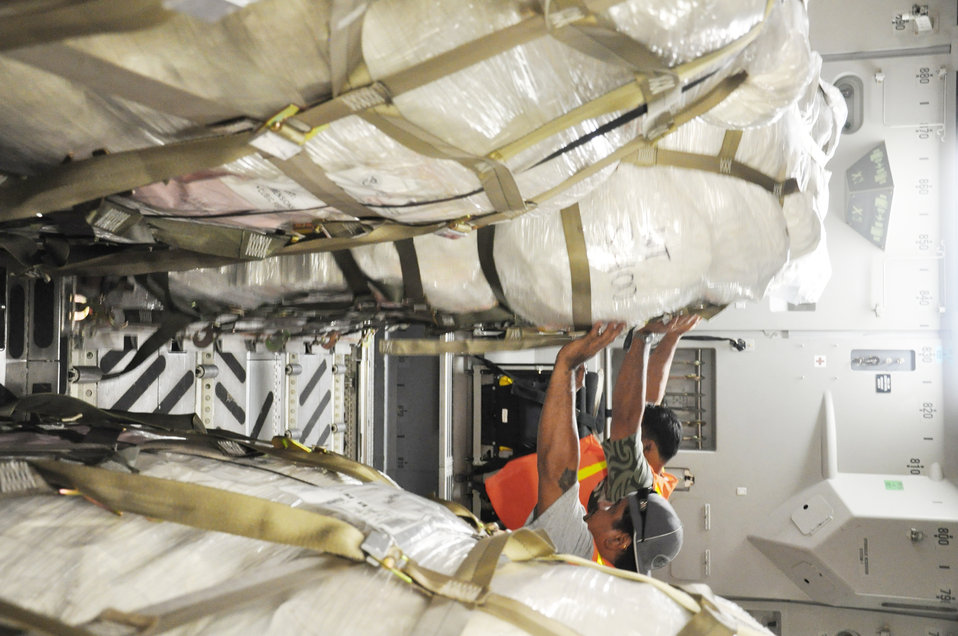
McChord Airmen complete second humanitarian airlift to American Samoa

Airmen from McChord Air Force Base, Wash., and Hickam AFB, Hawaii, and Air Mobility Command civilians offload Federal Emergency Management Agency cargo from a C-17 Globemaster III Oct. 10, 2009, at Pago Pago International Airport, American Samoa.